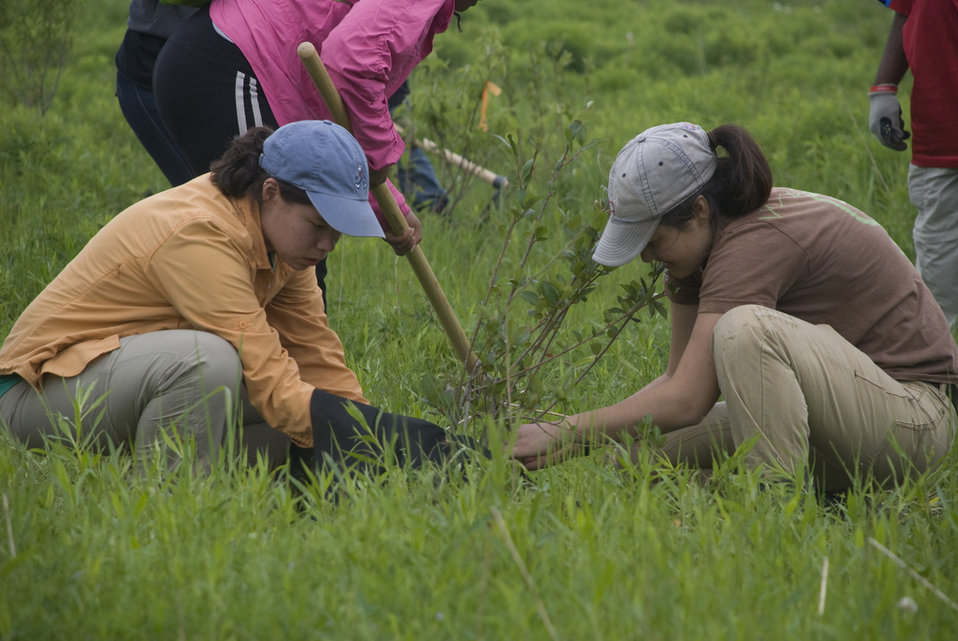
CIP students planting trees

U.S. Fish and Wildlife Service